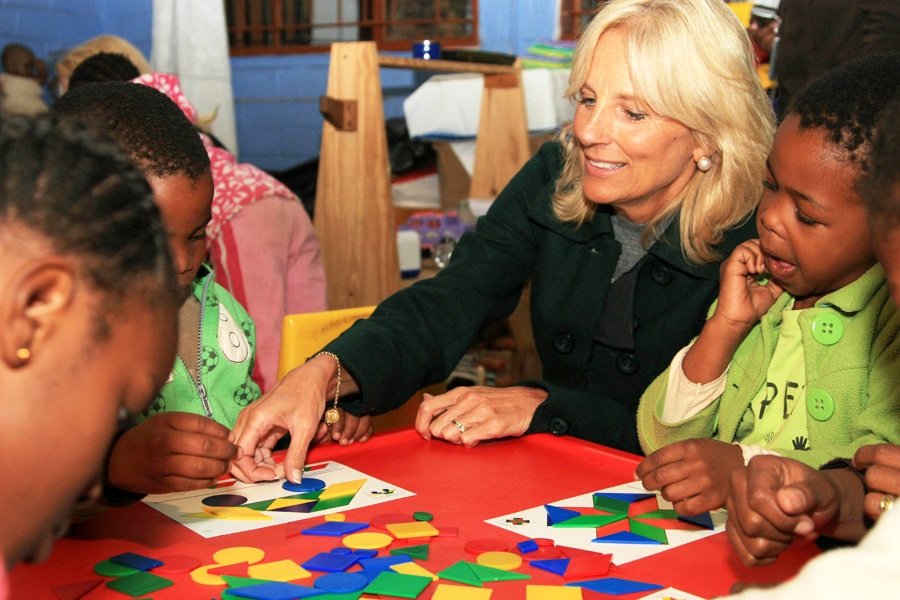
Dr. Jill Biden Plays Educational Games With South African Children

Dr. Jill Biden, wife of Vice President Joseph Biden, plays educational games with South African children during her visit to Mapetla Day Care Centre in Soweto, Johannesburg, South Africa, on June 10, 2010.